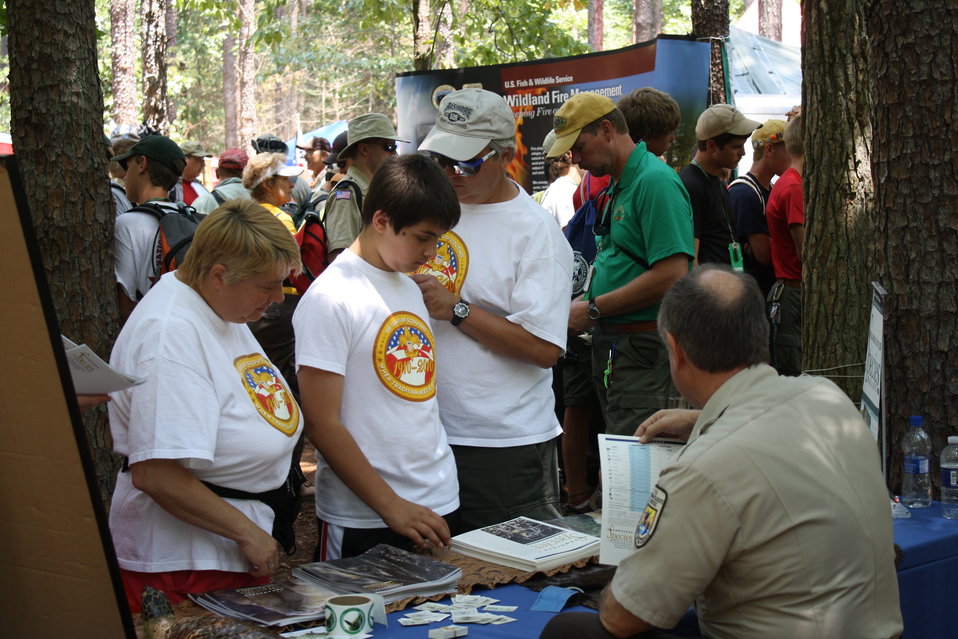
Boy Scout Jamboree 2010